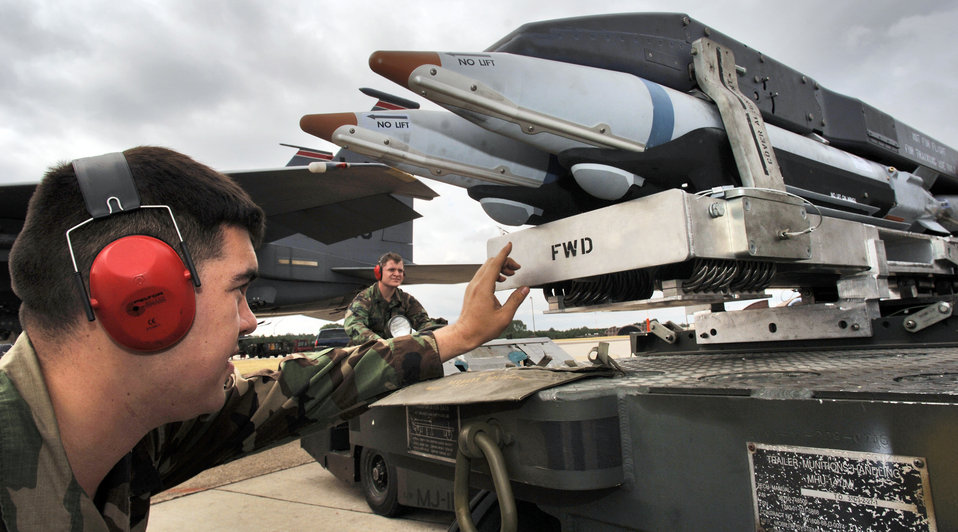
Small-diameter bomb makes Strike Eagle squadron more lethal

Staff Sgt. Randy Broome (left) and Airman 1st Class Robert Branham unload a Bomb Rack Unit 61 from a munitions trailer at Royal Air Force Lakenheath, England, on Aug. 1. Airman Branham operates the low-profile jammer to lift and maneuver the bombs under the F-15E Strike Eagle. The Airmen are aircraft weapons specialists with the 48th Aircraft Maintenance Squadron.